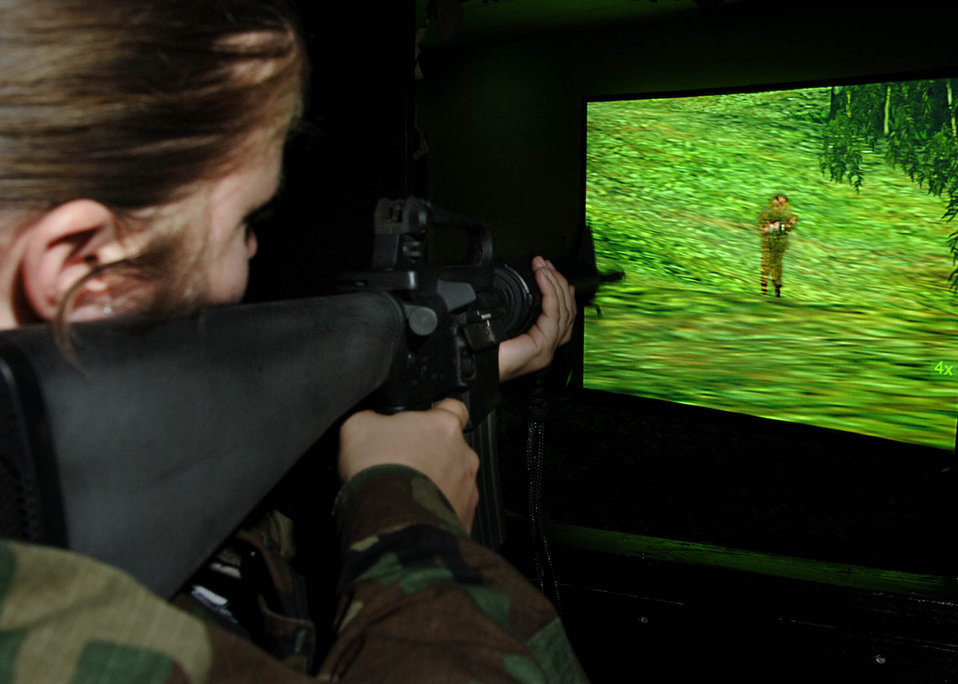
Hi-Tech training

LOS ANGELES AIR FORCE BASE, Calif. (AFPN) -- Capt. Jessica Devries secures a